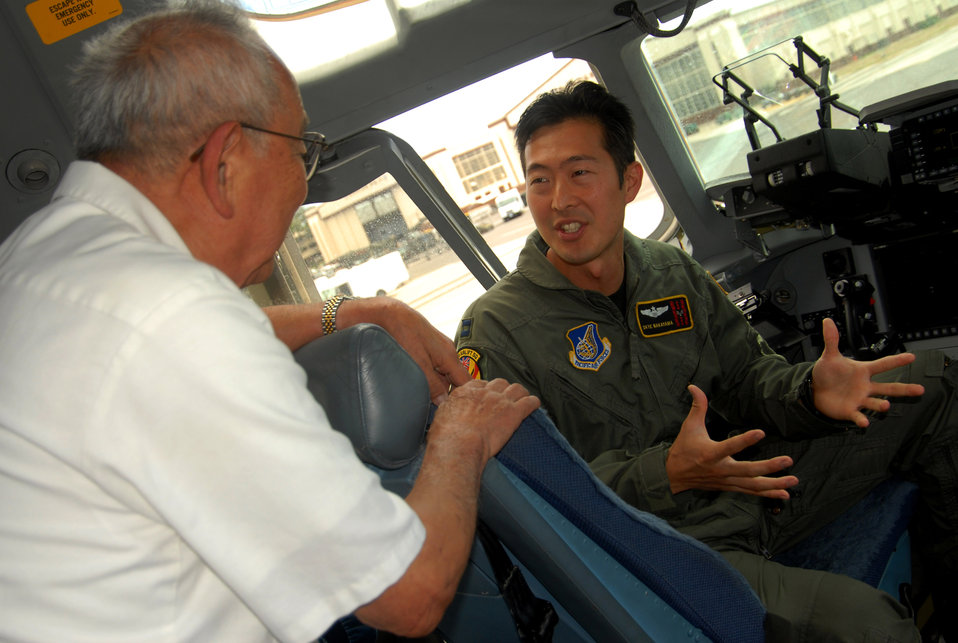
WWII veterans tour Hickam

Captain Skye Nakayama talks about the capabilities of the C-17 Globemaster III with World War II veteran Sam Fujikawa during a visit June 25 to Hickam Air Force Base, Hawaii. Mr. Fujikawa and other members of the 100th Infantry Battalion were touring the base. Captain Nakayama a pilot with the Hawaii Air National Guard's 154th Wing.